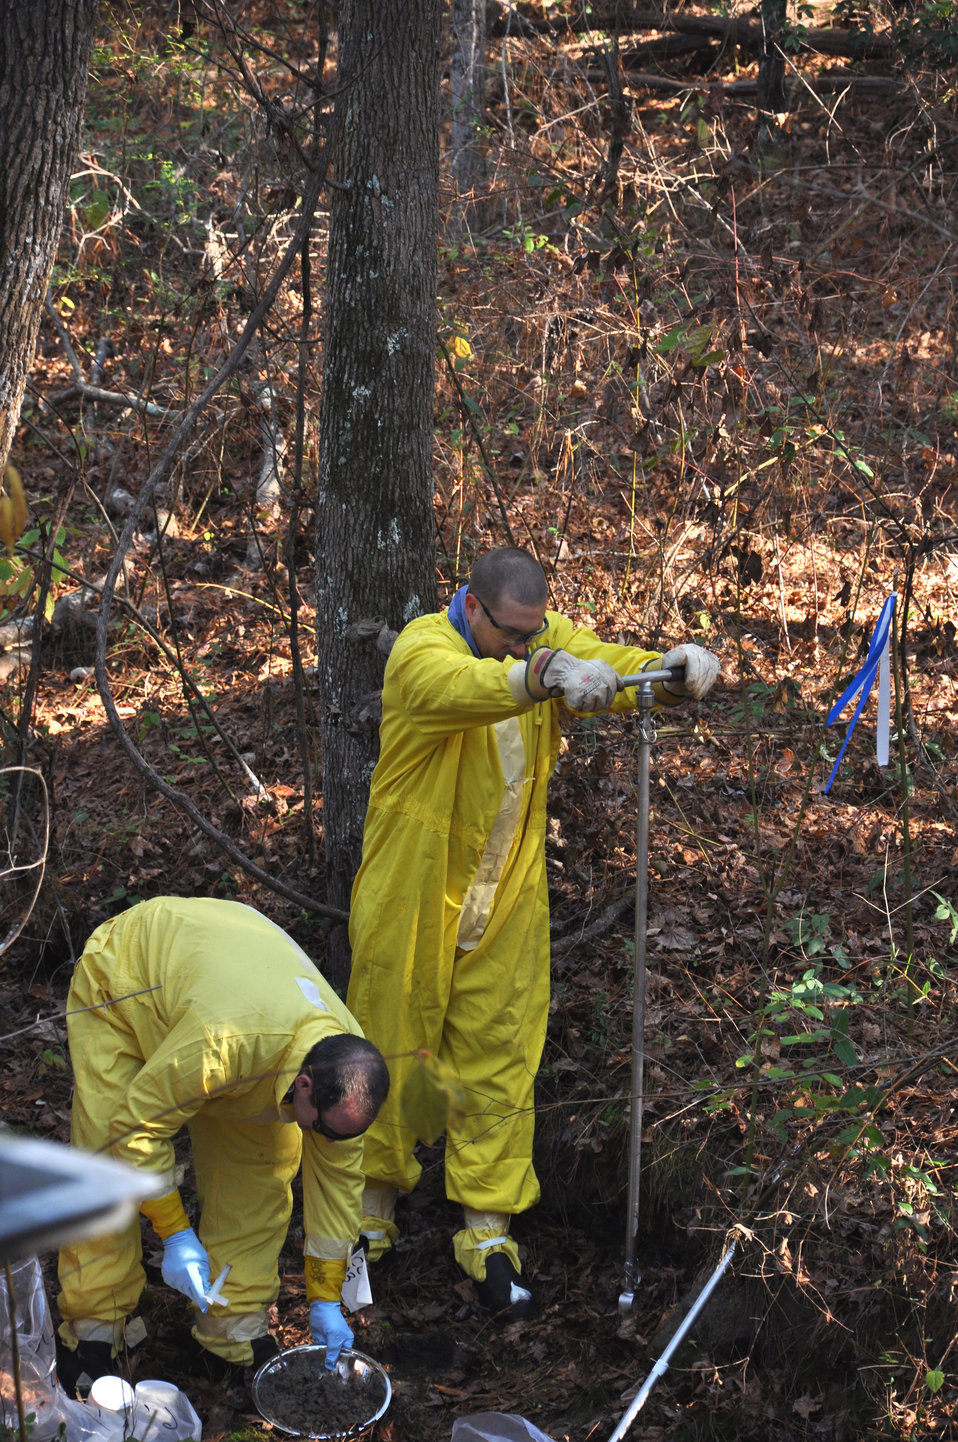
Workers Clean Up C Area as Added Value from Recovery Act P and R Reactor Projects

Workers conduct characterization and remediation activities in C Area.